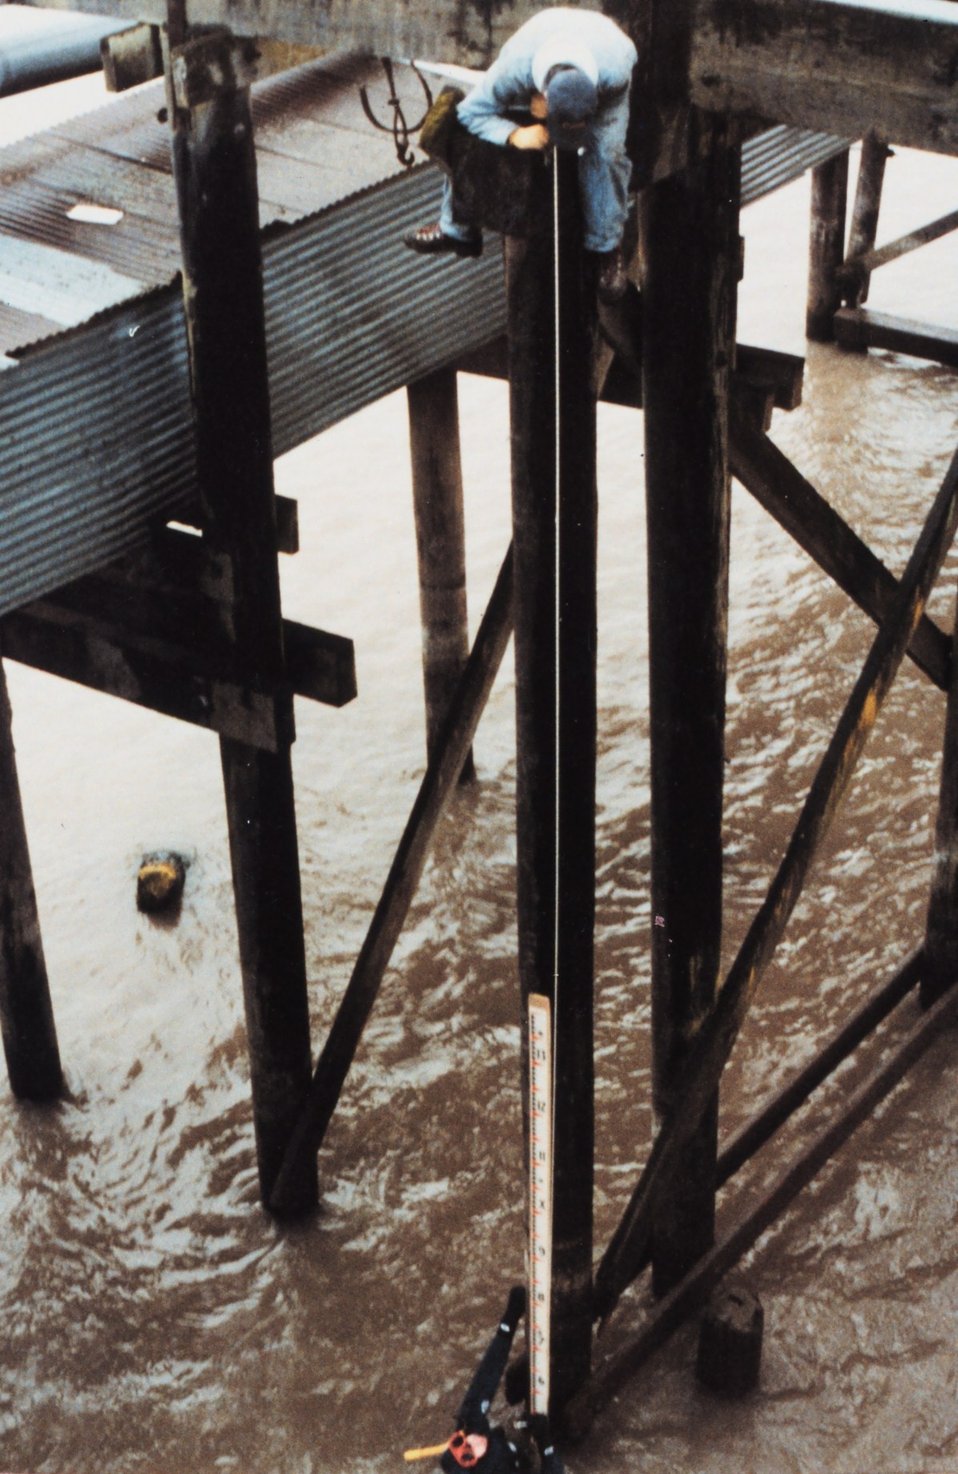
Andy Allen measuring distance from mark on tide staff to location on pier top. K. Fuhs is diver in water helping keep the tape vertical.